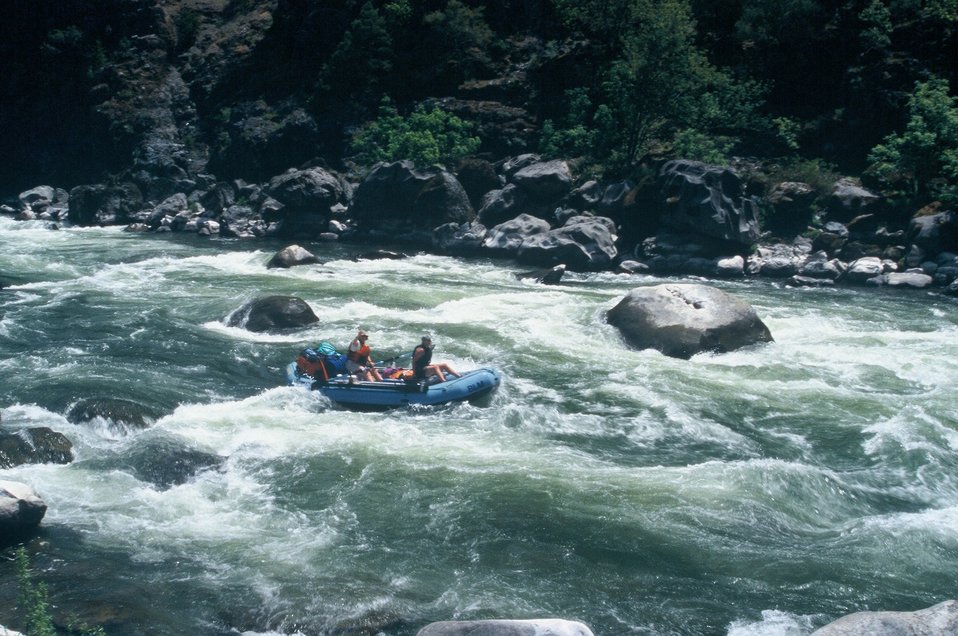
Wild section of the Rogue River from Grave Creek to Foster Bar May 19 to May 22.